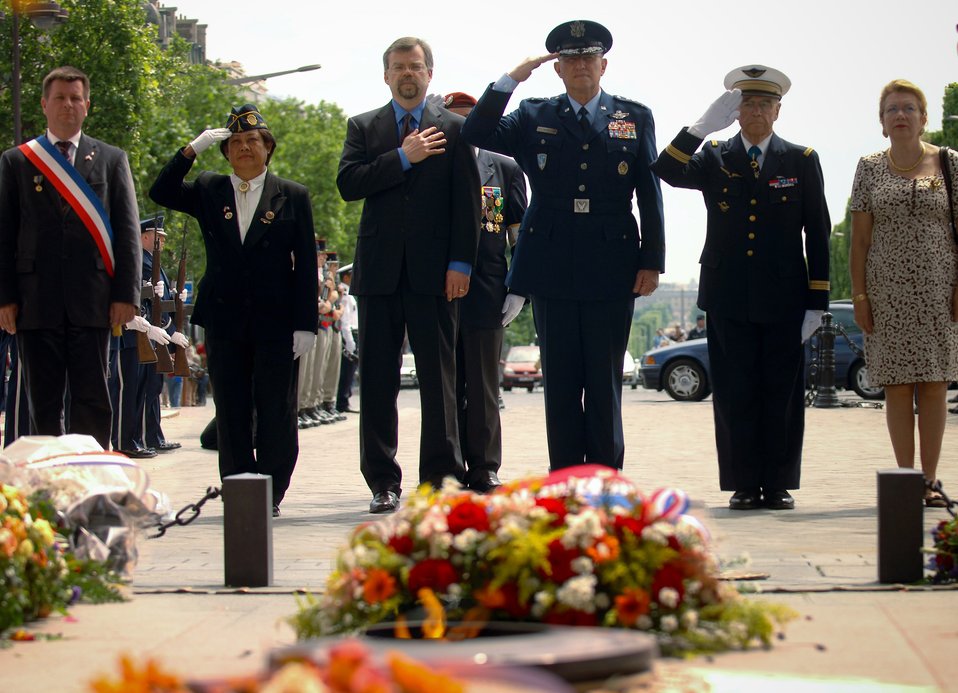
French-American tribute

After laying a wreath on the Tomb of the Unknown Soldier underneath the Arc de Triomphe in Paris May 25, U.S. Air Forces in Europe Commander Gen. Roger Brady pays final respects with American and French officials.